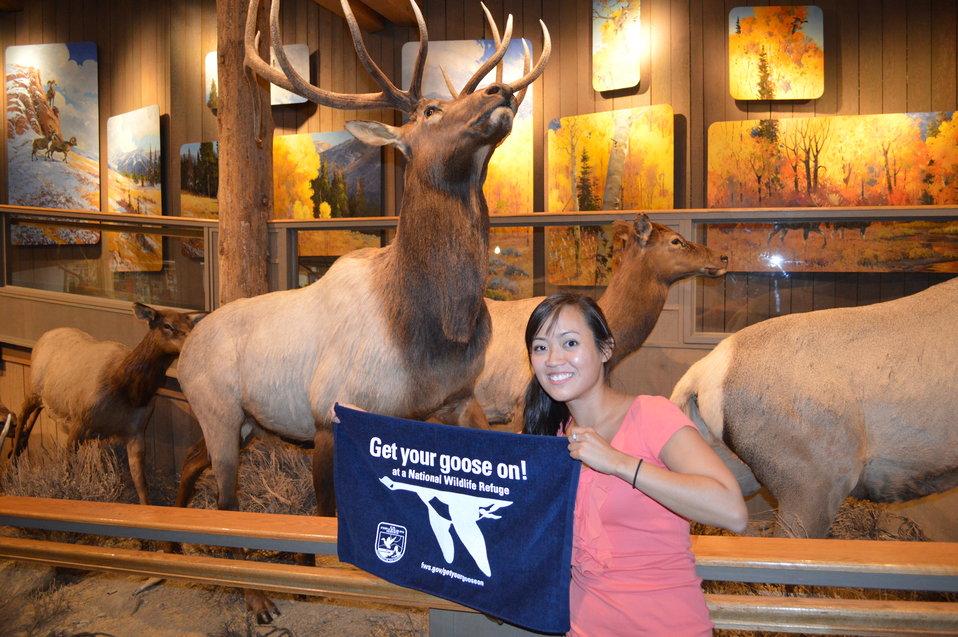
Get Your Goose On! - National Elk Refuge Style

On August 10, 2012 the U.S. Fish and Wildlife Service and Partners celebrated the 100 year anniversary of the establishment of the National Elk Refuge. In these photos, young attendees, along with Puddles the Blue Goose and the National Elk Refuge's mascot, showed us how to Get Your Goose On! with style.